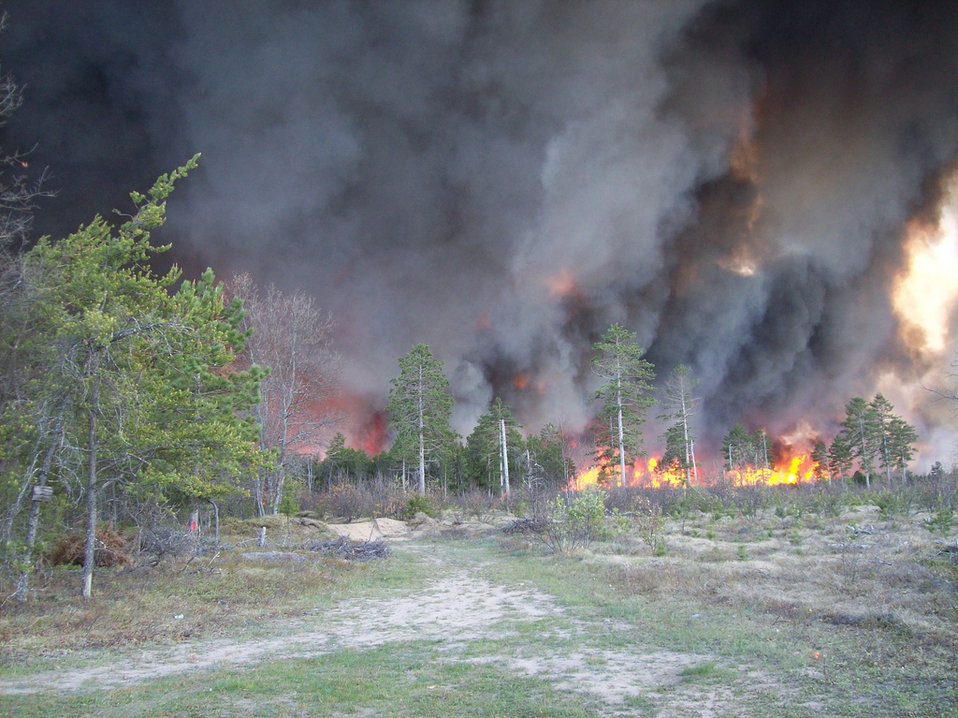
Meridian Fire of 2010

Meridian Fire burned thousands of acres of Huron-Manistee National Forest and adjoining Michigan Department of Natural Resource lands in 2010. Although the fire burned through planted Kirtland's warbler habitat it also will likely result in the creation of hundreds of acres of habitat in about six or seven years.

Learn about the historical importance of fire in managing healthy jack pine forests in Michigan, which the endangered Kirtland’s warbler depends: www.fws.gov/endangered/news/episodes/bu-10-2011/kirtlands...